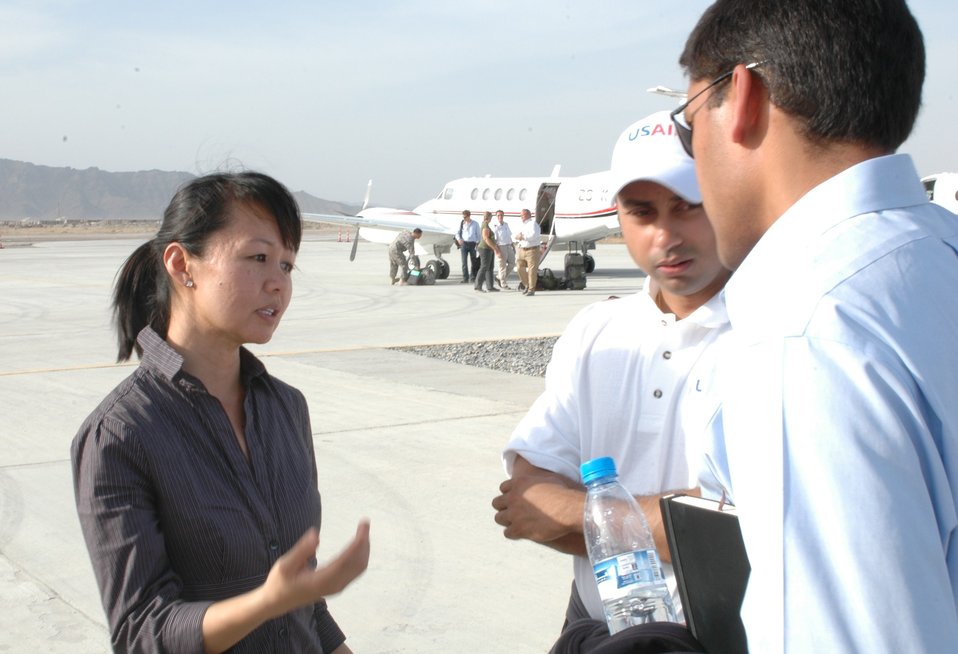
Dr Shah Visits Argandab April 10, 2010